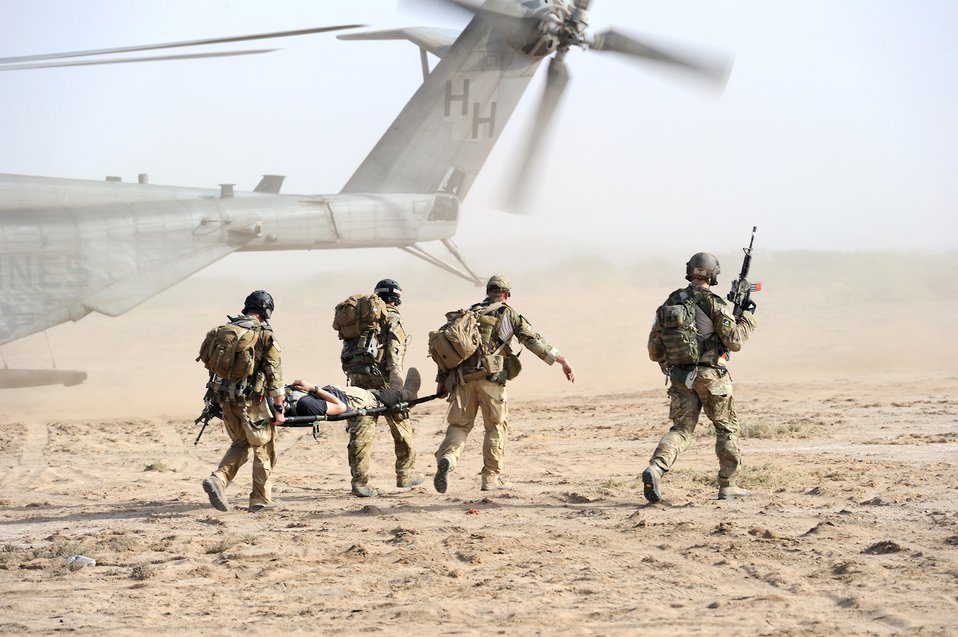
Airmen participate in African rescue exercise

Air Force pararescuemen transport an injured